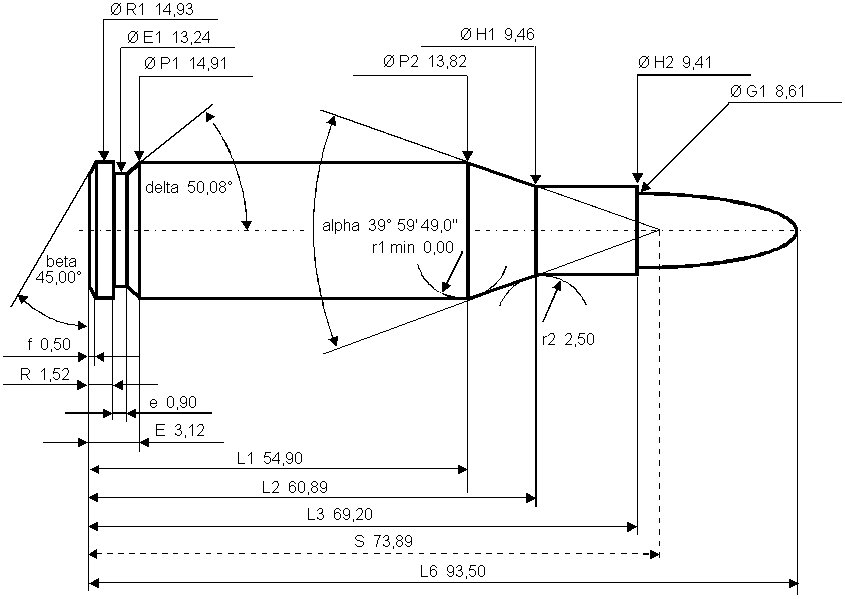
.338 Lapua Magnum maximum C.I.P. cartridge dimensions. All sizes in millimeters (mm).